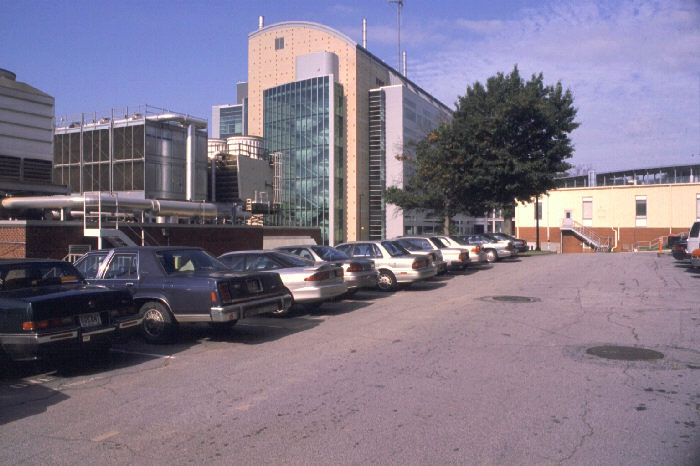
CDC Building 17, Roybal Campus.